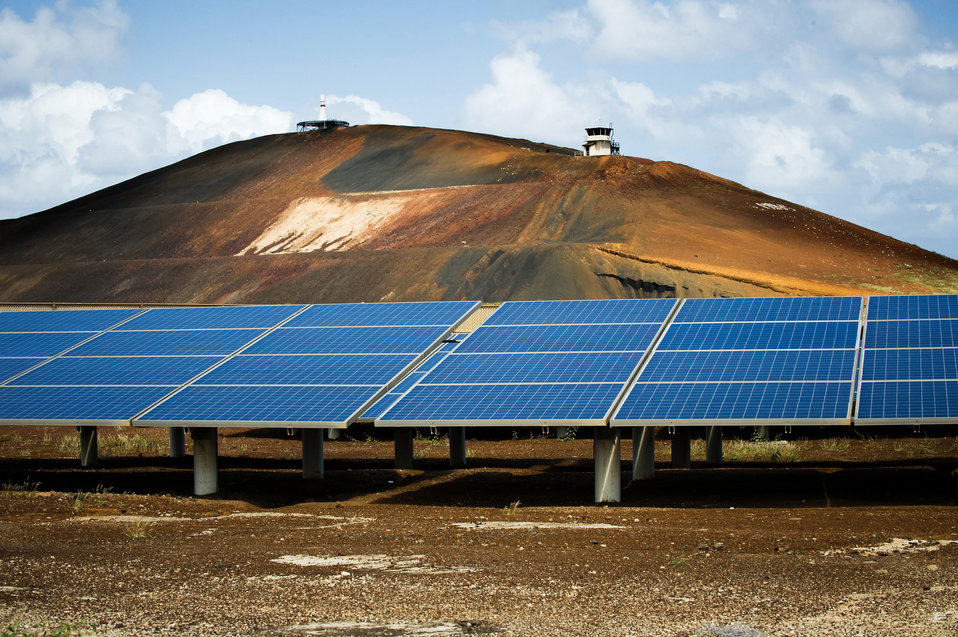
Remote base uses natural energy to power facilities

Several rows of solar panels provide power for the runway lights at Ascension Auxiliary Airfield, a small base belonging to the 45th Space Wing. The base, located on Ascension Island in the South Atlantic Ocean, has earned several awards for its energy conservation initiatives.